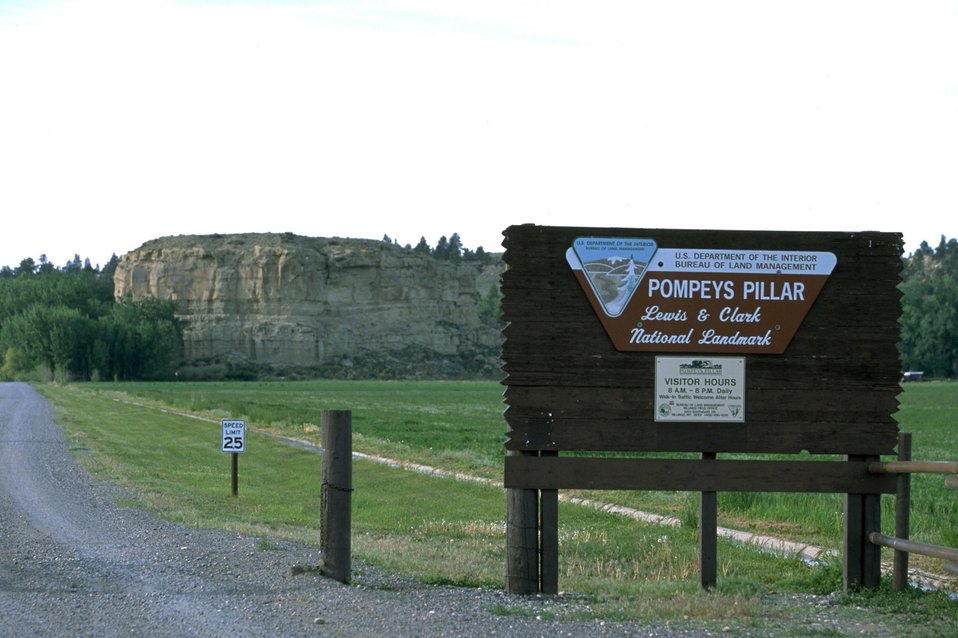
Entrance sign to Pompeys Pillar National Monument